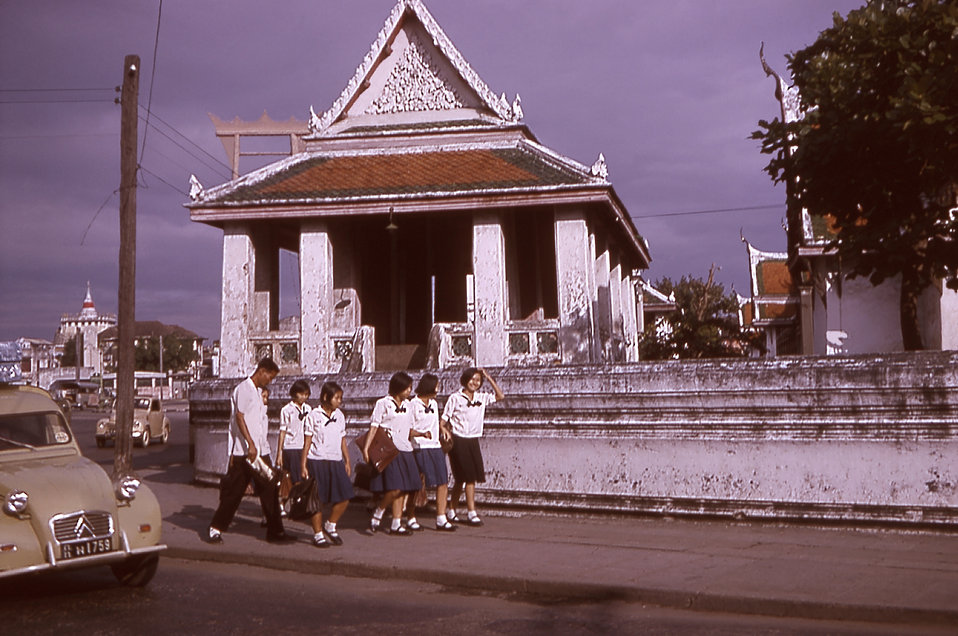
This 1964 photograph depicts Bangkok, Thailand students in typical attire.